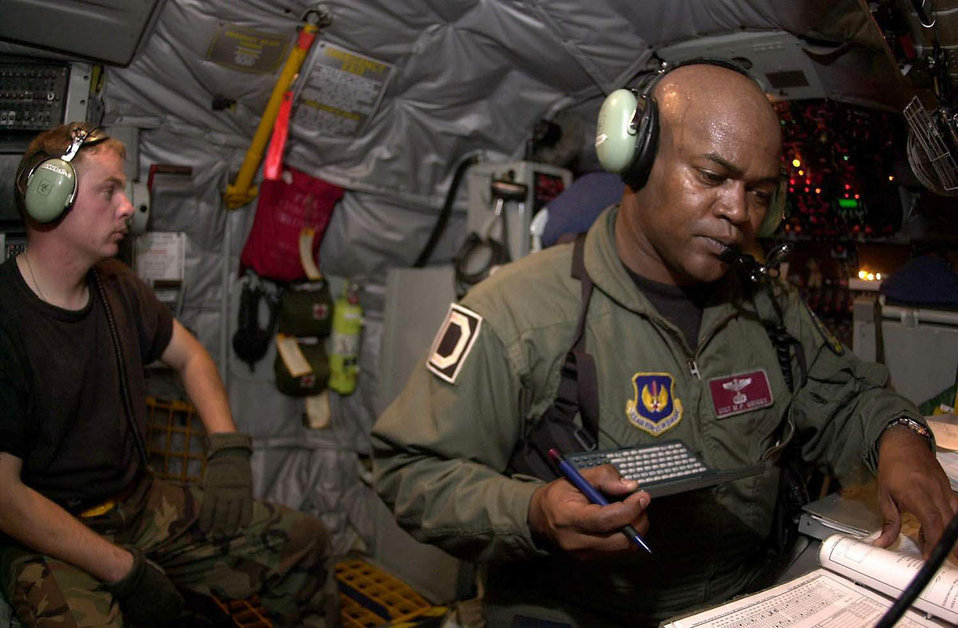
Boom Eval

OPERATION ENDURING FREEDOM -- A KC-135 crew chief waits onboard as a boom operator reevaluates the fuel weight balance of their aircraft. The aircrew refueled two C-17 Globemaster III transport planes and several escort aircraft supporting a humanitarian relief mission associated with Operation Enduring Freedom. The C-17s delivered 27,000 humanitarian daily rations for refugees in eastern Afghanistan.